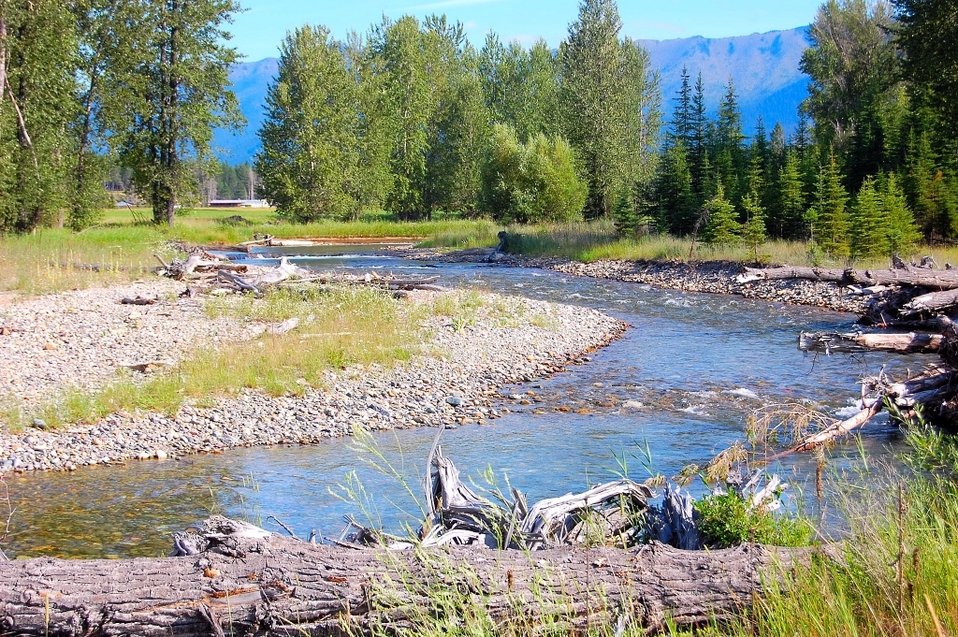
Grave Creek, Montana

As part of the USFWS Climate Change Strategy, Partners for Fish and Wildlife program focused on restoring habitats impacted by climate change. Native fish species are some of the most vulnerable to these effects and Partners for Fish and Wildlife is working to restore the form and function of streams and rivers.